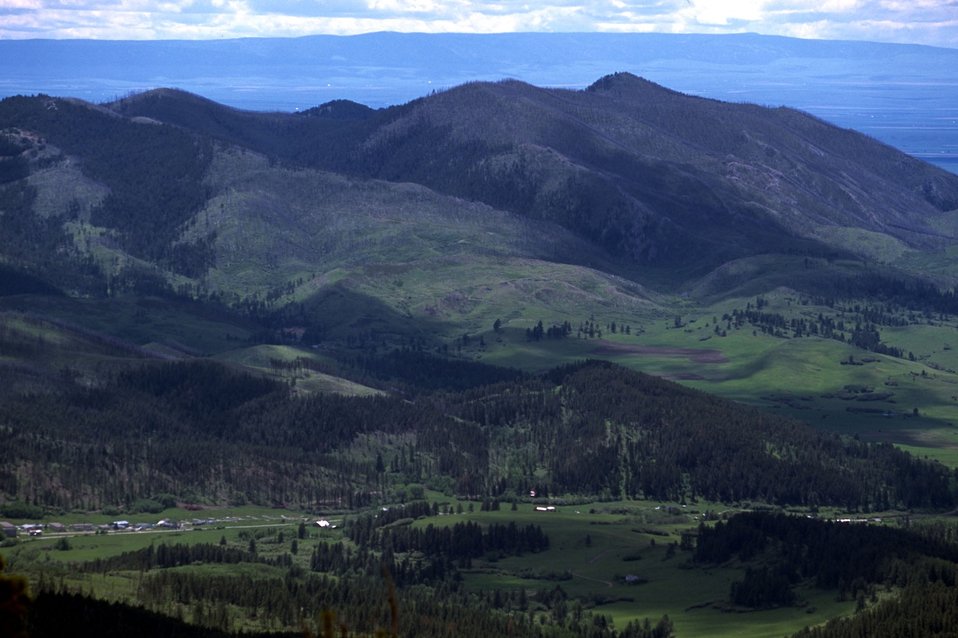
An old burn area in Maiden Canyon